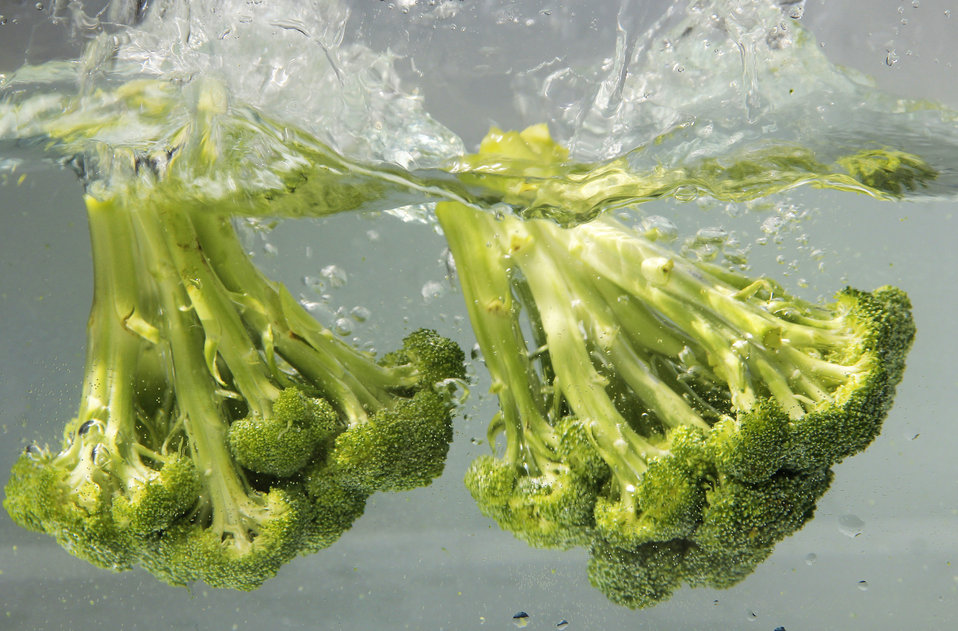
Dunked into a tub of clean water, these two fresh heads of green broccoli were undergoing a thorough cleansing prior to their addition to a healthy meal. Broccoli is a terrific source of vitamins A and C, as well as dietary fiber.